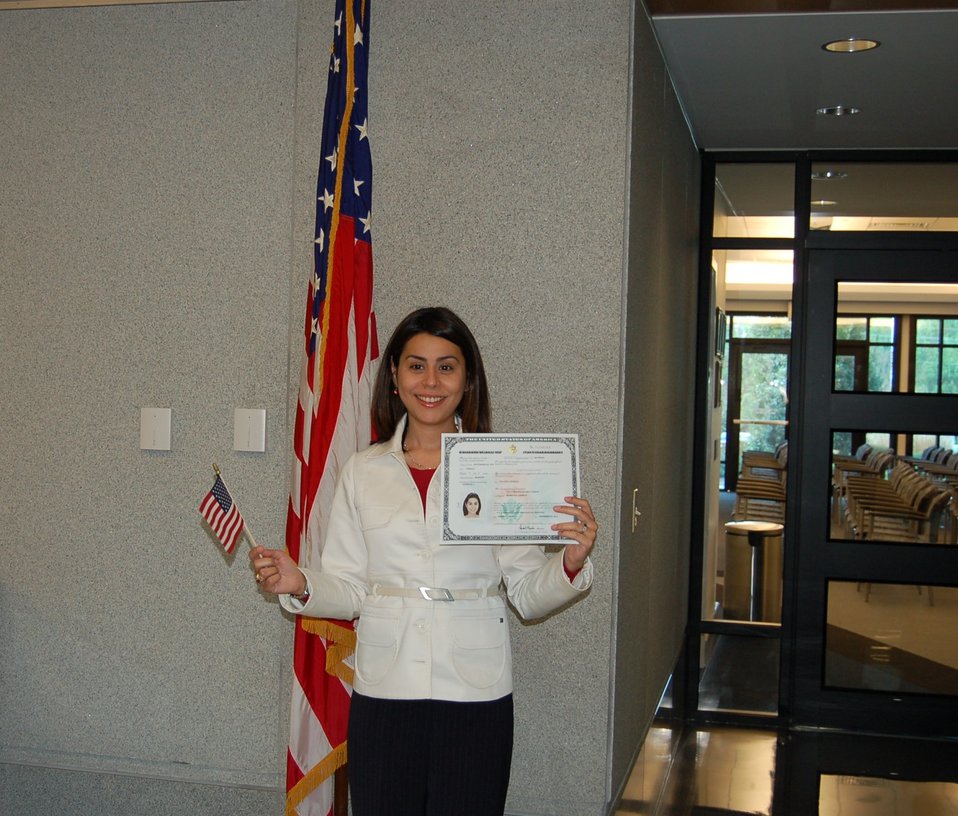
New Citizens